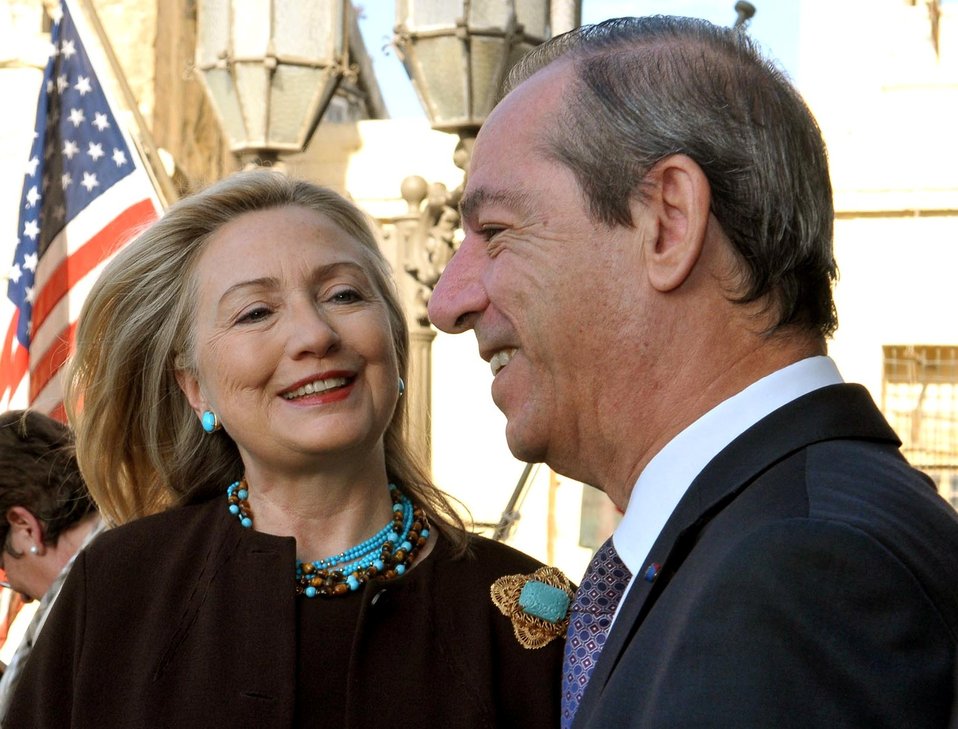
Secretary Clinton Is Greeted By Maltese Prime Minister Gonzi

U.S. Secretary of State Hillary Rodham Clinton is greeted by Maltese Prime Minister Lawrence Gonzi upon her arrival at the Auberge de Castille in Valletta, Malta, on October 18, 2011.